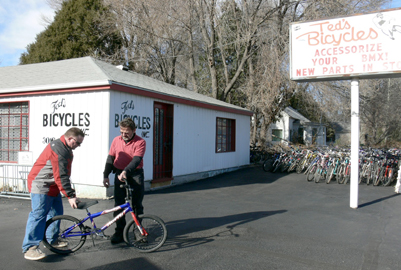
Airman aims to help others

(Left) Maj. John Thomas gives one of three bikes he refurbished to Tony Hoewisch, the owner of Ted's Bicycles, Dec. 11, 2010, in Colorado Springs, Colo. These bicycles will be given to children and adults at the 28th annual Bob Telmosse Christmas Giveaway Dec. 20, 2010, in Colorado Springs. Major Thomas is the 721st Mission Support Group chief of plans and programs. He rebuilds discarded bikes and then donates them.